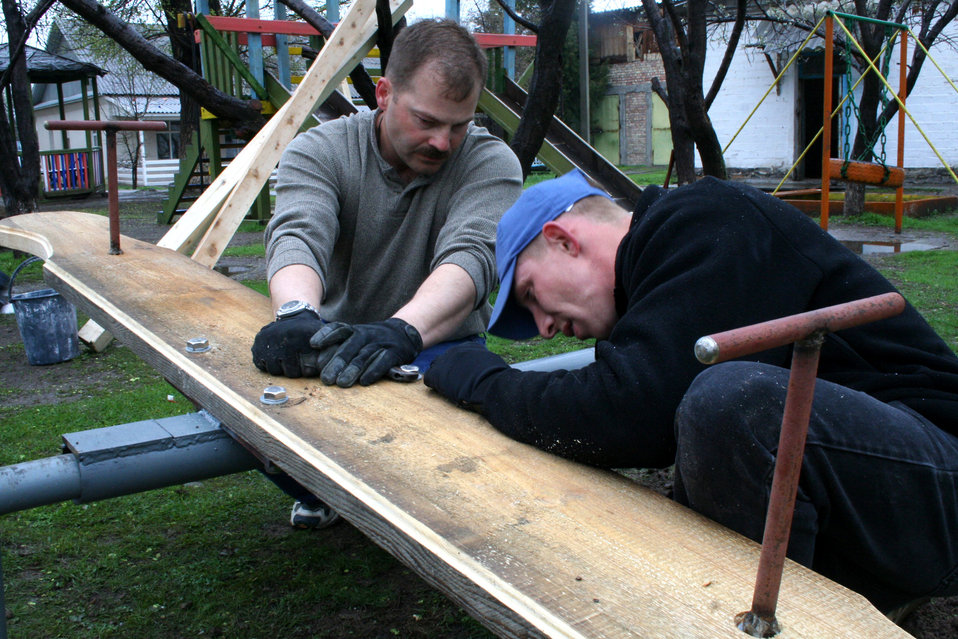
Orphanage favorite off-duty destination for Manas Airmen

Master Sgt. Arthur Roy and Staff Sgt. Scott Williams install a seesaw at the Belovodsky Orphanage for children with special needs. Sergeant Williams helped construct the seesaw and has worked on other projects for the orphanage during his off-duty hours. The orphanage is in Belovodsky, Kyrgyzstan.